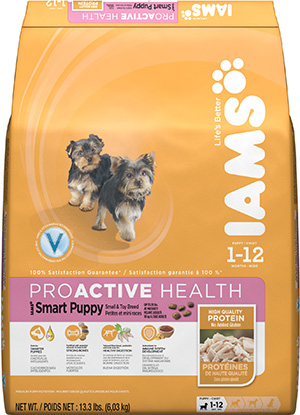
RECALLED – Dog and Cat foods - Dry

August 14, 2013 – Product Recall – P&G Voluntarily Recalls Limited Quantity of Dry Pet Food Due to Possible Health Risk.